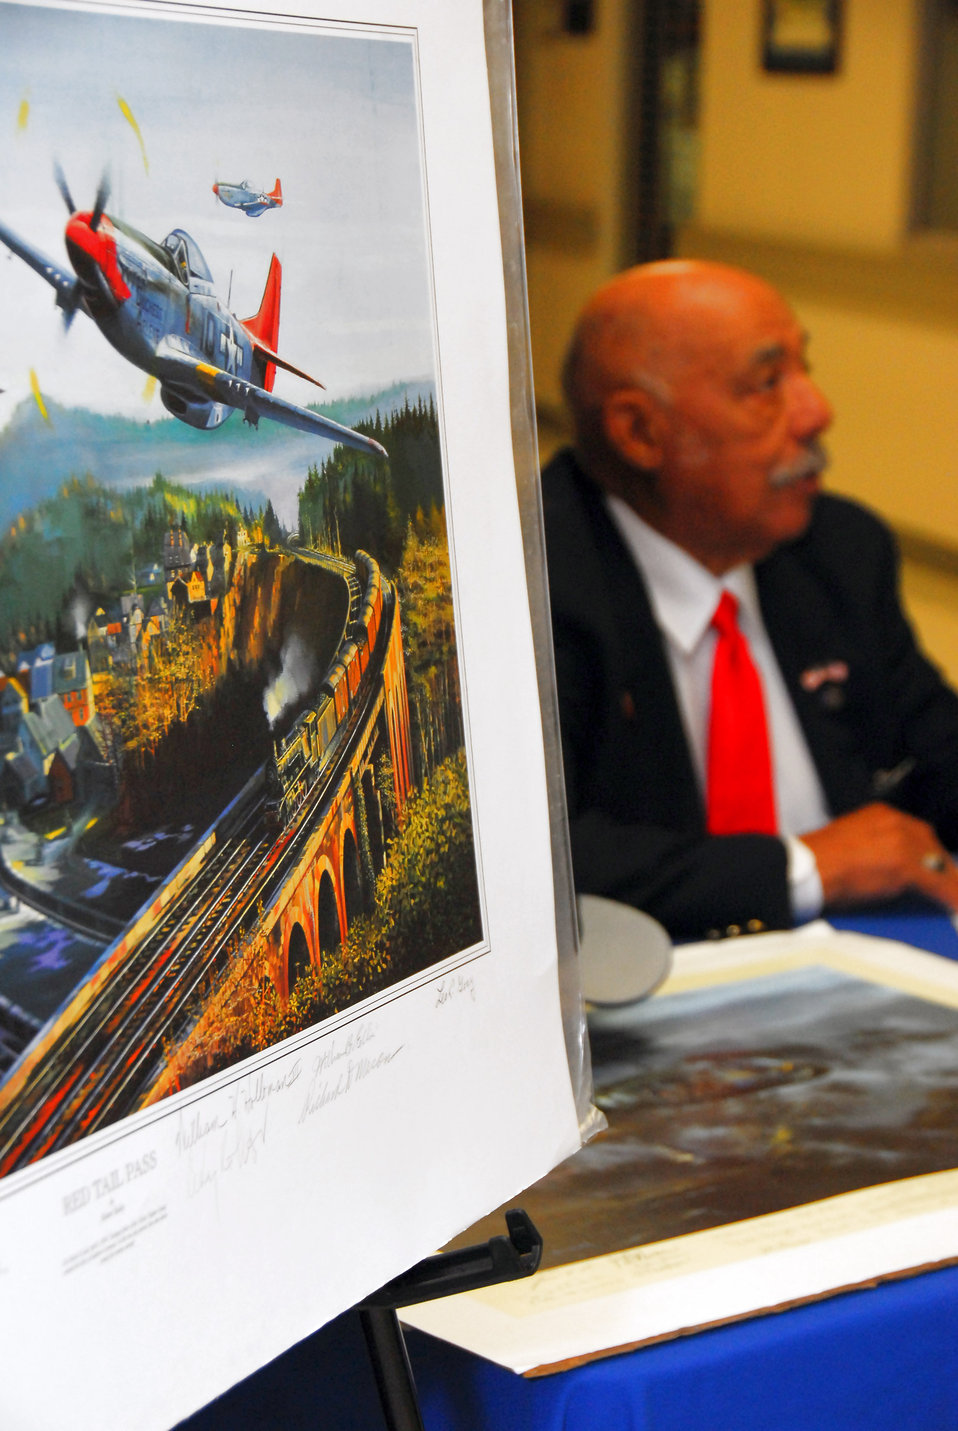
Historic Tuskegee Airmen address Air Force captains

Retired Lt. Col. William Holloman, one of the original Tuskegee Airmen, signs autographs near a lithograph depicting the Tuskegee Airmen in combat during World War II at Maxwell Air Force Base, Ala.